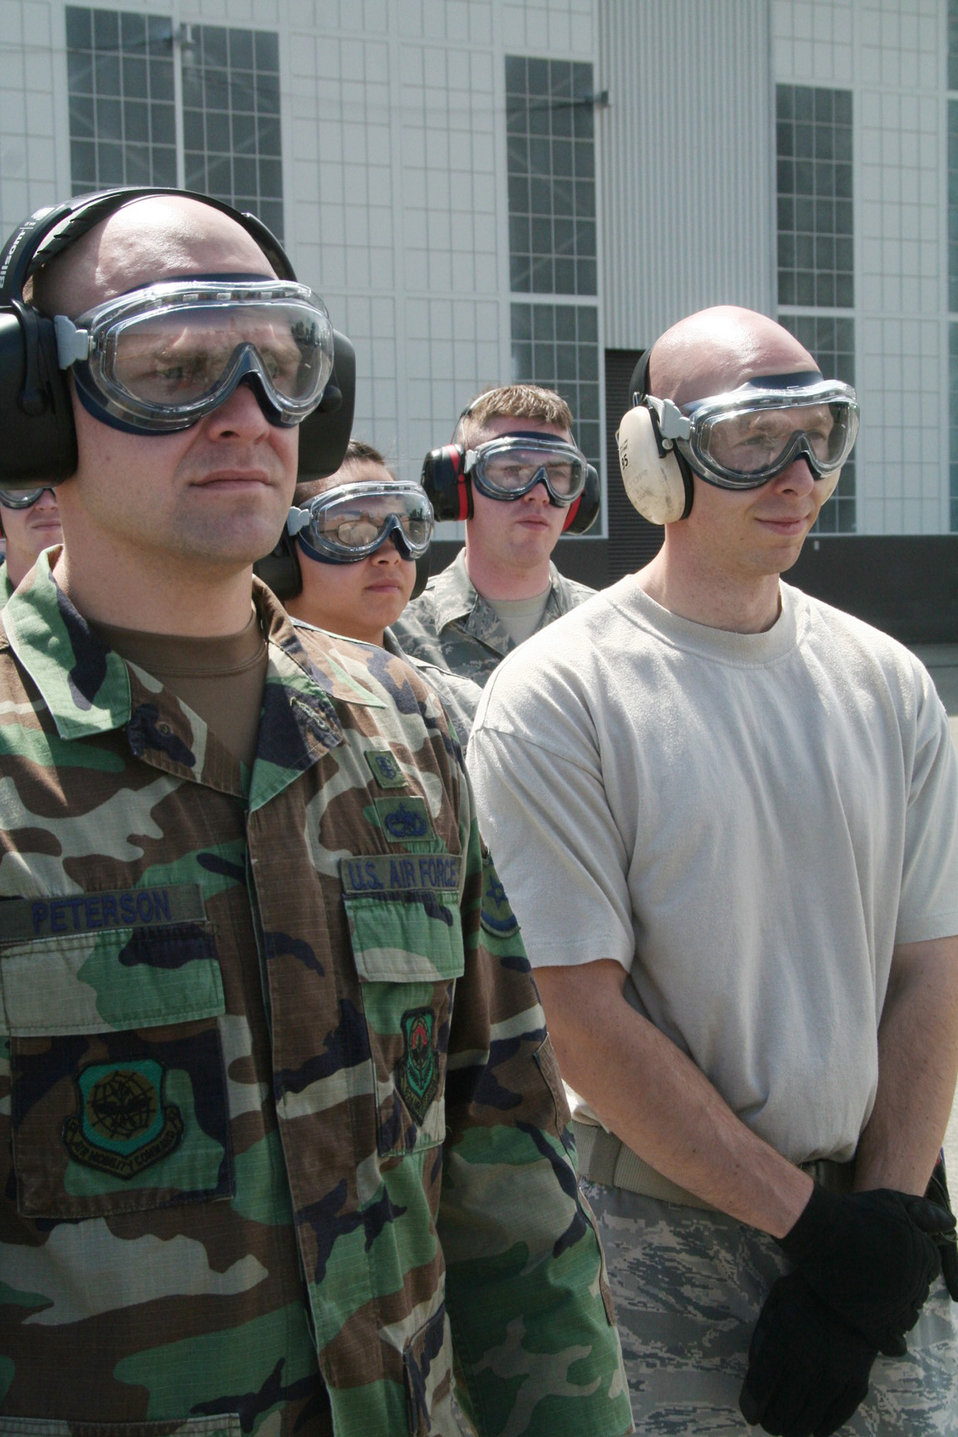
Guard members bring unique skills to war effort

Teams competing in the aeromedical evacuation events for Air Mobility Rodeo 2009 wait in line as the competition commences July 20 at McChord Air Force Base, Wash. More than 100 teams are participating in RODEO competition, including teams from seven foreign countries. RODEO is the Air Force's and Air Mobility Command's premier air mobility competition. It's an international combat skills and flying operations competition designed to develop and improve techniques, procedures and interoperability with international partners to optimize mobility partnerships and enhance mobility operations.